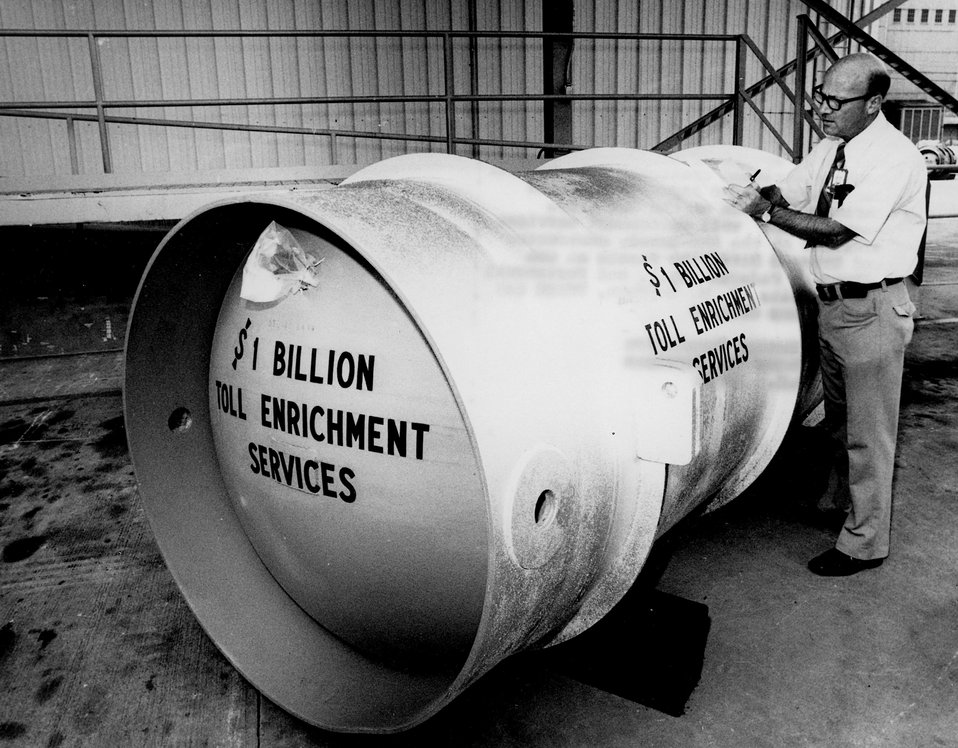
Over 90 percent of the world's nuclear power plants that are expected to be operating through this decade will require enriched uranium. Circa 1974.